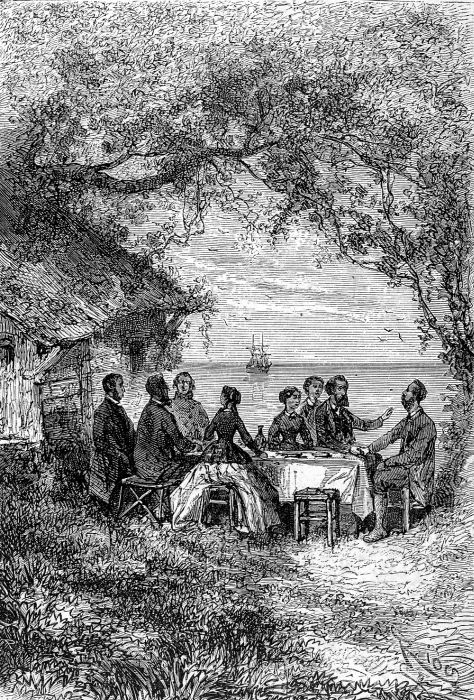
An ilustration from the novel 'In Search of the Castaways; or Captain Grant's Children' by Jules Verne drawn by Édouard Riou. Polski: Ilustracja powieści Juliusza Verne'a 'Dzieci kapitana Granta' autorstwa Édouarda Riou. Français : 'Les Enfants du capitaine Grant', Édouard Riou. Français : « C’est un paradis que cet îlot. »